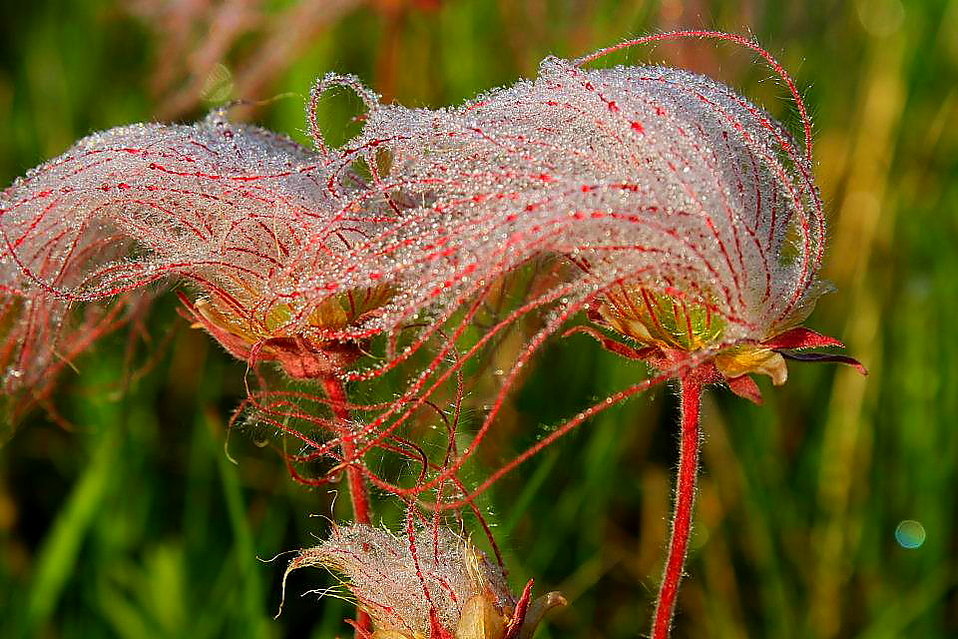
7th Place - Morning Dew on Prairie Smoke

Prairie Smoke is a Spring blooming wildflower found in native prairie. The name is derived from the flower which looks like small columns of smoke.

Location: Chase Lake NWR/WMD/PP Headquarters

Credit: Neil Shook / USFWS

Photo Contest Entry #176